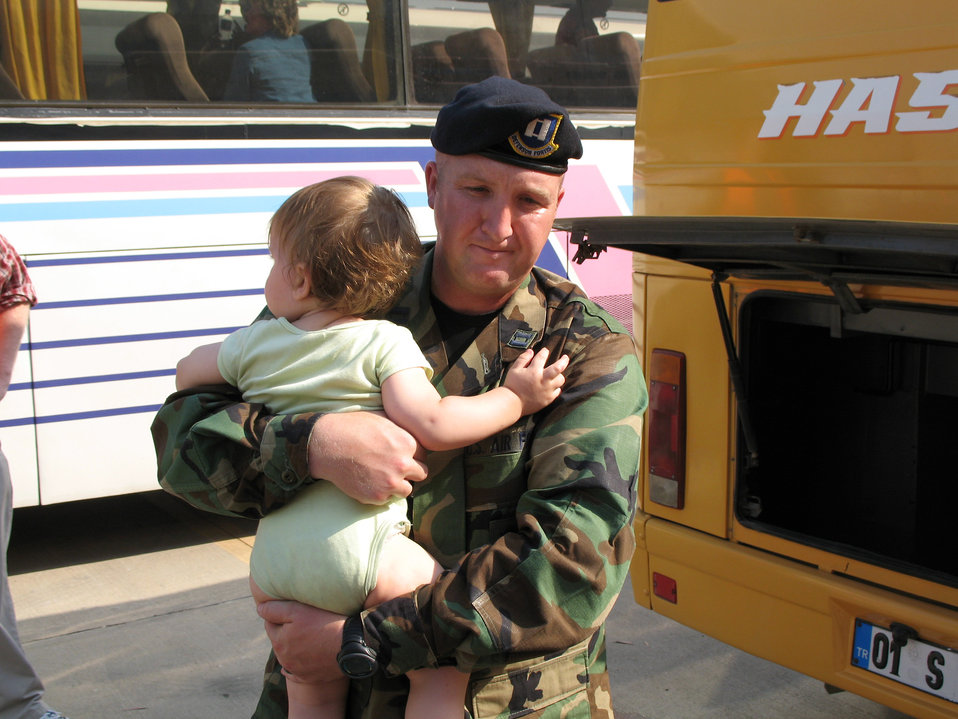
Americans arrive in Turkey from Lebanon

Capt. James Alves assists a small American child who just arrived at Incirlik Air Base, Turkey, July 24th, from Lebanon. More than 1,600 citizens arrived in the port city of Mersin, Turkey, on the USS Trenton before being transported by bus to Incirlik. Captain Alves is assigned to the 39th Security Forces Squadron.